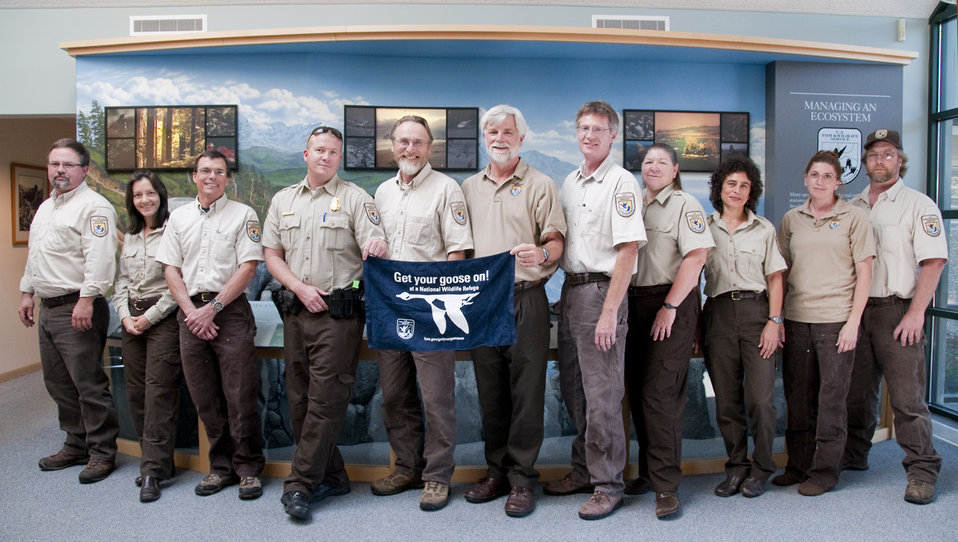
Get Your Goose On!

Oregon Coast National Wildlife Refuge Complex staff getting their goose on at their field office.